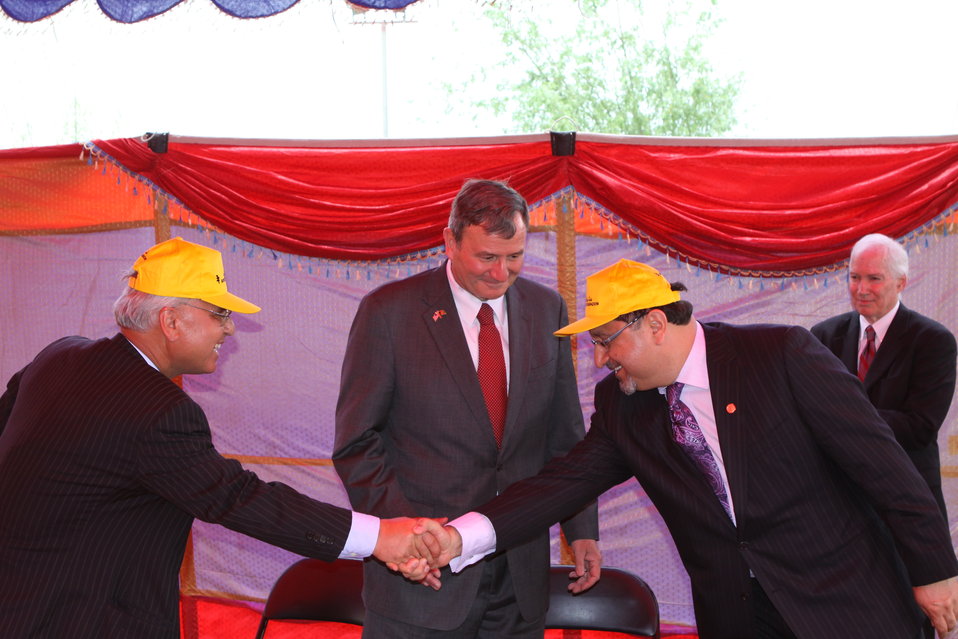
100526 AUAF Graduation 385